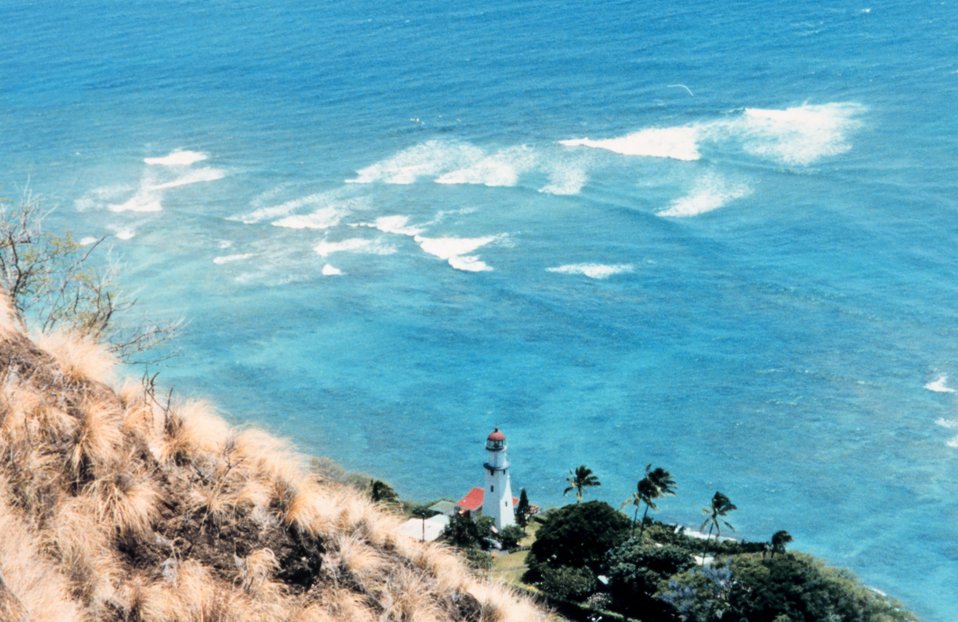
Southeast shore lighthouse